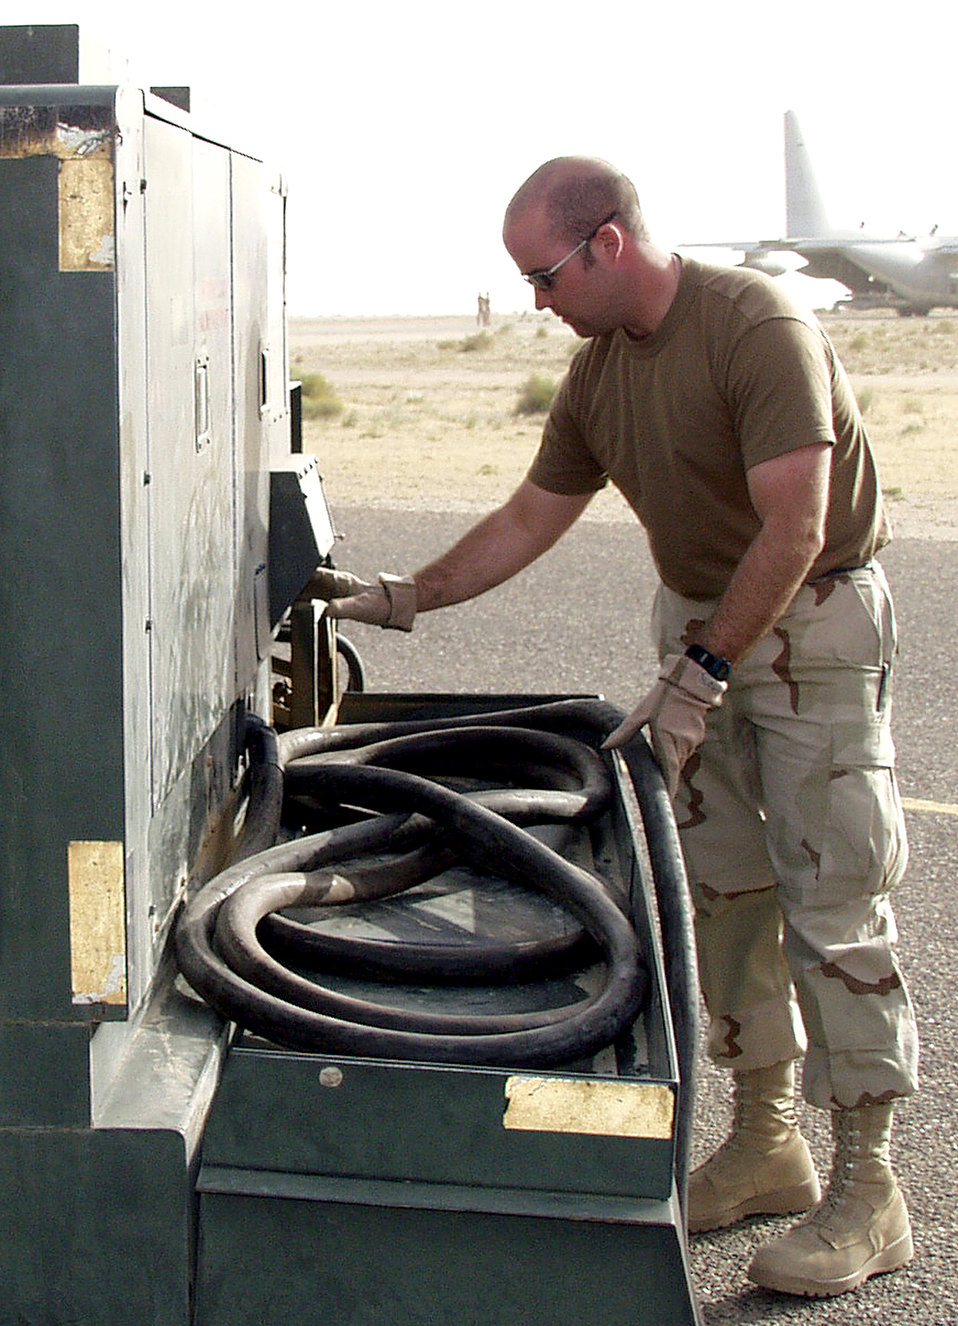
Transient alert team

OPERATION IRAQI FREEDOM -- Staff Sgt. Robert Rawlings, a heavy aircraft crew chief with the 386th Air Expeditionary Wing's transient alert team, shuts down an external power unit for a C-130 Hercules heading to Iraq. The transient alert team ensures transient aircraft are properly parked, provides power to aircraft, assists in moving cargo pallets and troubleshoots and fixes maintenance problems.